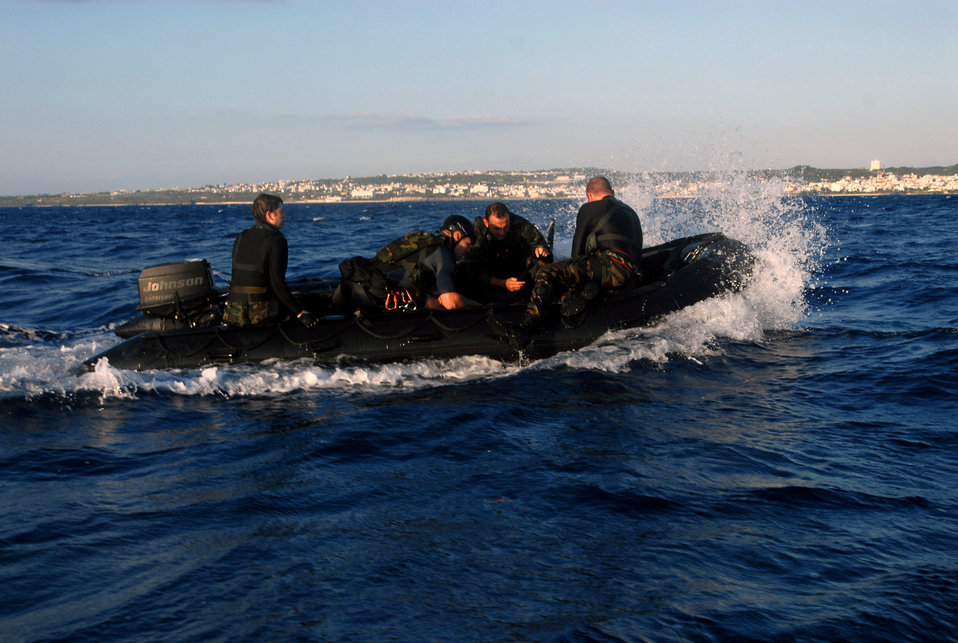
Airmen practice water rescue

Members of the 31st Rescue Squadron return Capt. Derek Flynn, 67th Fighter Squadron, to Kadena Air Base, Japan, after pulling him out of the waters off the coast of Okinawa. Captain Flynn was placed in the water as part of a Survival Evasion Resistance Escape exercise Oct. 24, during Local Operational Readiness Exercise Beverly High 08-1.